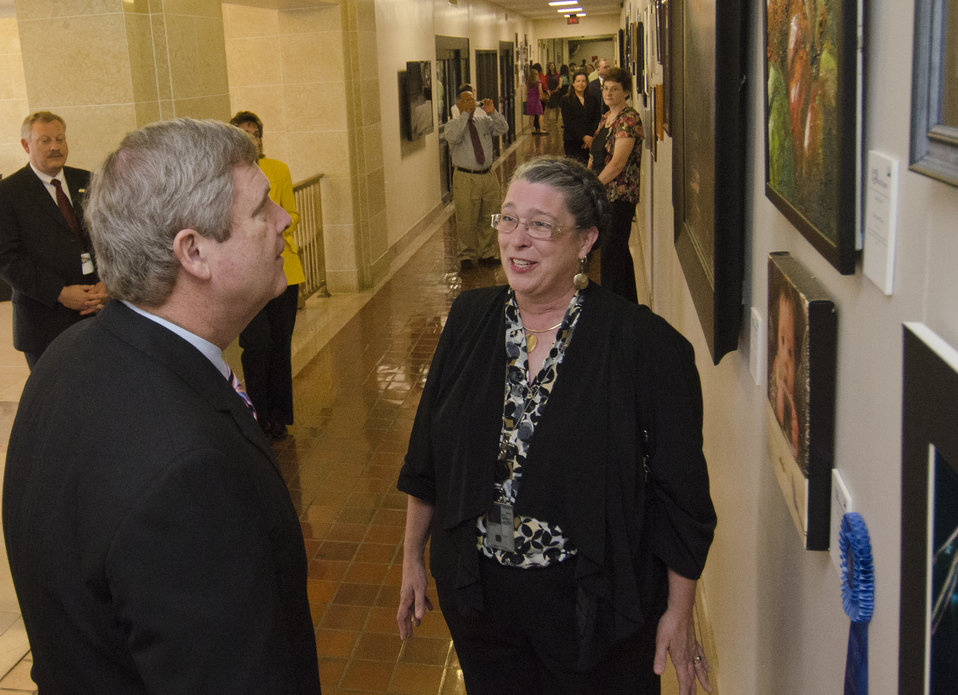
Mary Beth Flowers discusses her artwork with Agriculture Secretary Tom Vilsack during his visit to the gallery of winning entries and some of the employee artists from the inaugural competition for Art and Agriculture, Thursday, May 31, 2012, in the South Building, Washington, D.C. U.S. Department of Agriculture (USDA) full-time and part-time employees submitted art based on ten agricultural themes. The event was part of USDA's 150th Anniversary celebration and the winning artwork is on display from May 15 through December 31, 2012. Artistic expression is a creative outlet that is vital for an individual to grow and develop in their environment.